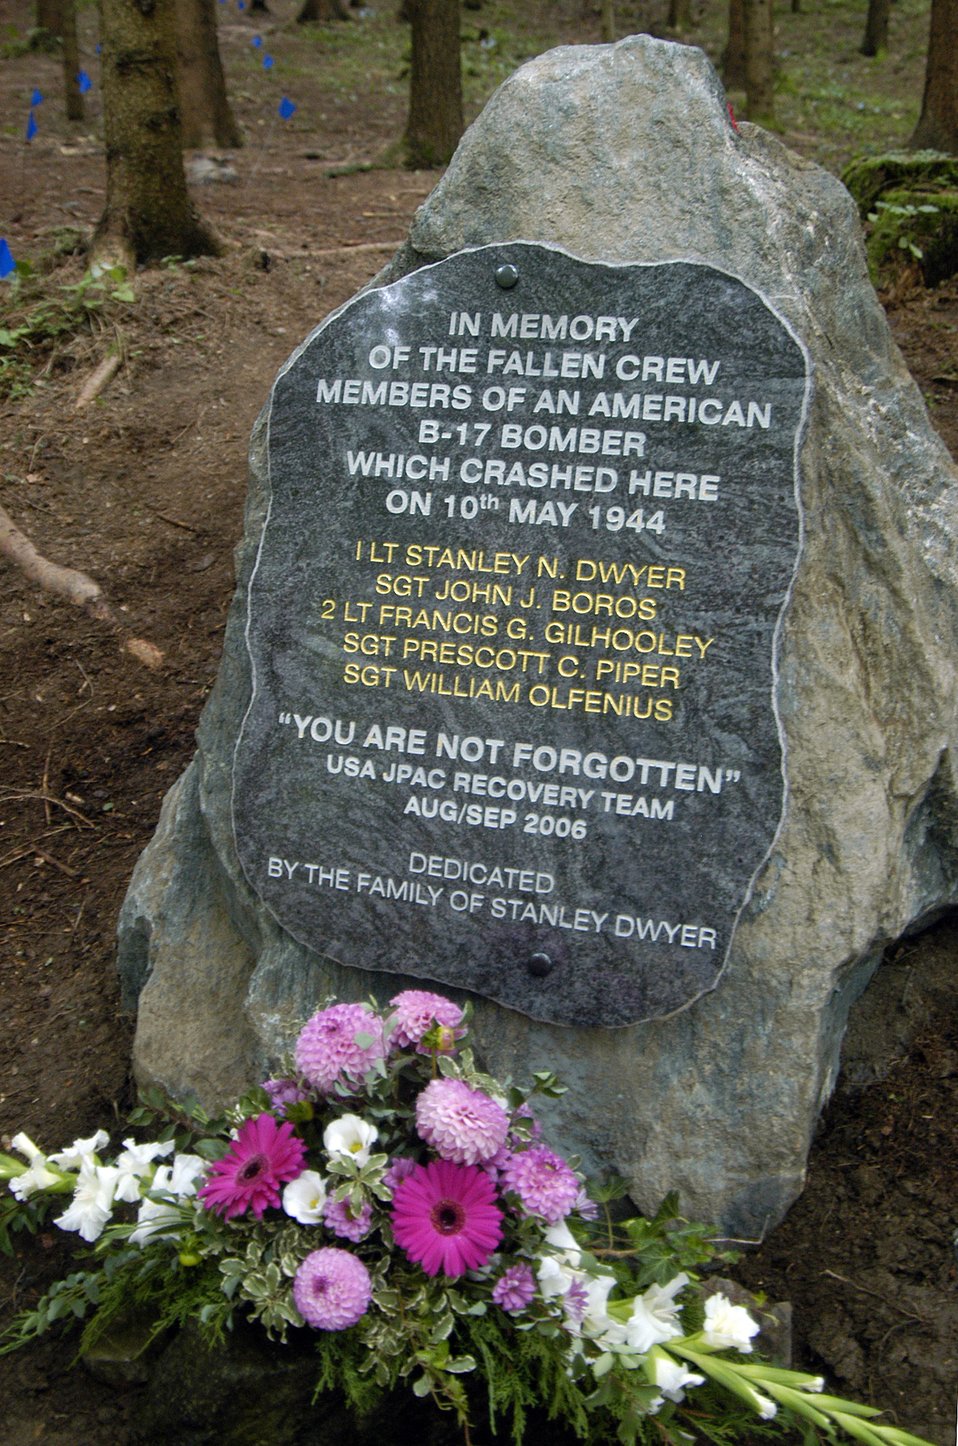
JPAC team returns from Austria

A memorial stone near the Vostenhof, Austria, site of a B-17 bomber crash recognizes the sacrafice of the crew. The stone was placed by 1st Lt. Stanley Dwyer's family, who were in Austria to witness the excavation of the crash site and attend a memorial service Aug. 27. An 18-member JPAC team, including a forensic anthropologist, explosive ordnance disposal technician and field medic, from Hickam Air Force Base, Hawaii, returned Oct. 1 after 45 days in Austria attempting to recover the remains of 1st Lt. Stanley Dwyer and gunner Sgt. John Boros who were lost in the crash May 10, 1944. The mission of JPAC is to achieve the fullest possible accounting of all Americans missing as a result of the nation's past conflicts.